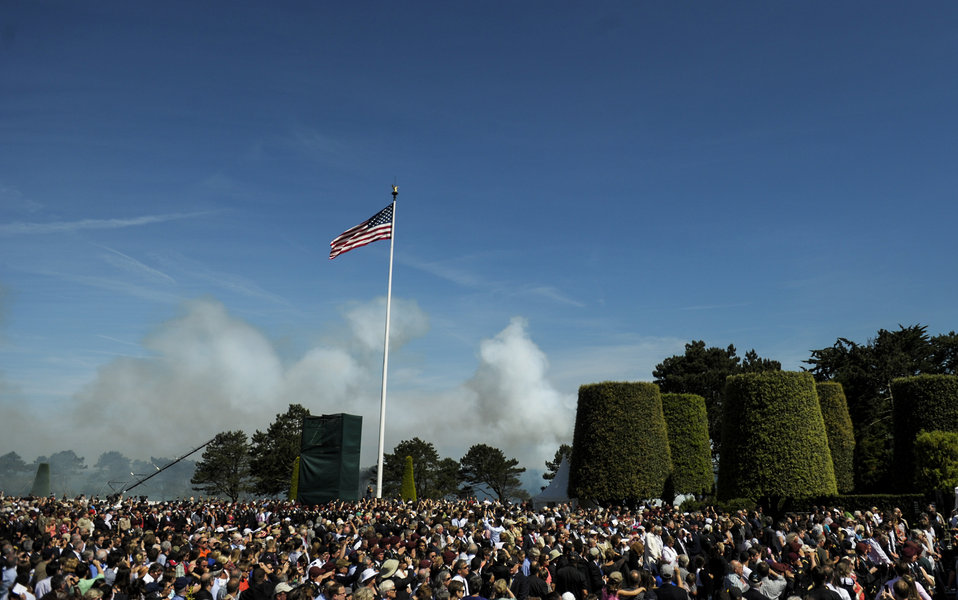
A 21-Gun Salute Fills the Sky as Taps Plays During 70th Anniversary of D-Day Commemoration

A 21-gun salute fills the sky as Taps play overhead during the D-Day commemoration ceremony at the Normandy American Cemetery in Colleville-sur-Mer, France, on June 6, 2014. The event was one of several commemorations of the 70th Anniversary of D-Day operations conducted by Allied forces during World War II June 5-6, 1944. Over 650 U.S. military personnel have joined troops from several NATO nations to participate in ceremonies to honor the events at the invitation of the French government.